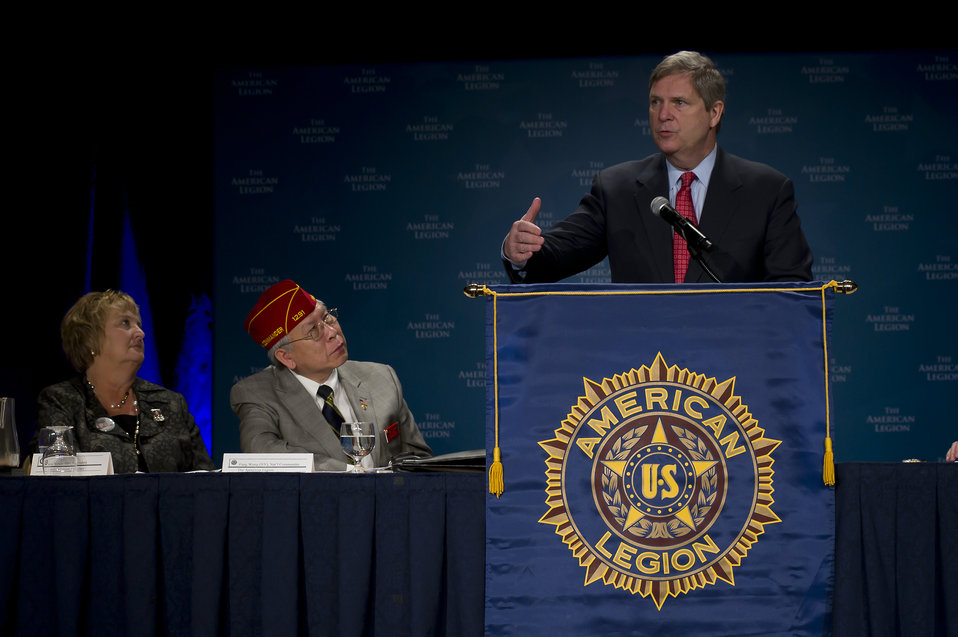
U.S. Secretary of Agriculture Tom Vilsack speaks to the American Legion prior to signing a memorandum of understanding with the American Legion which will help our Nation's veterans and transitioning military service members find positions that promote agriculture, animal and plant health, food safety, nutrition, conservation and rural communities at the Washington Hilton in Washington, D.C., on Tuesday February 28, 2012.